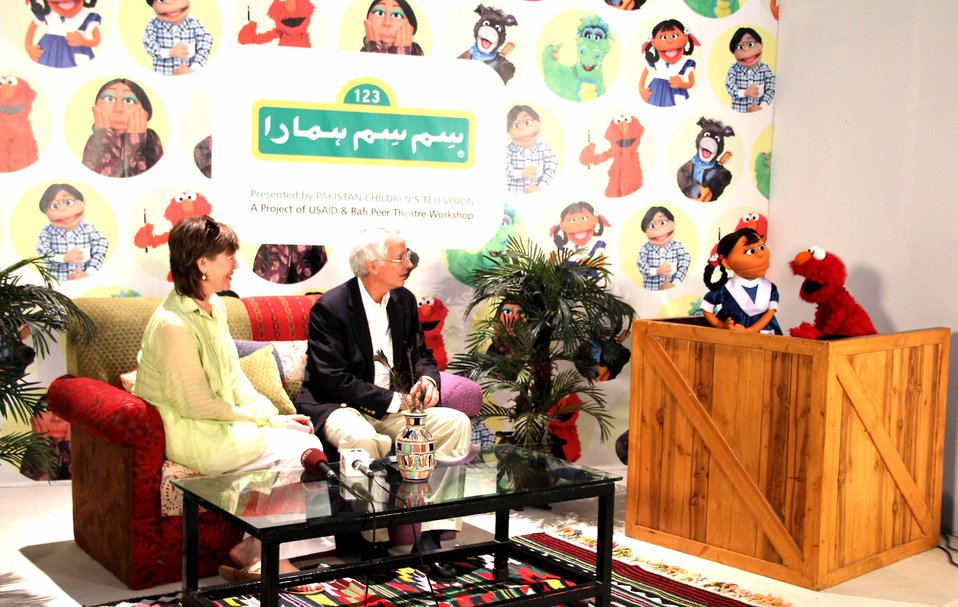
U.S. Ambassador’s Visit to Sim Sim Hamara Highlights U.S. Commitment to Improved Children’s Education in Pakistan at Lahore on 28 April, 2012

US Ambassador Cameron Munter & his wife Dr. Marliyn Wyatt recored his message.